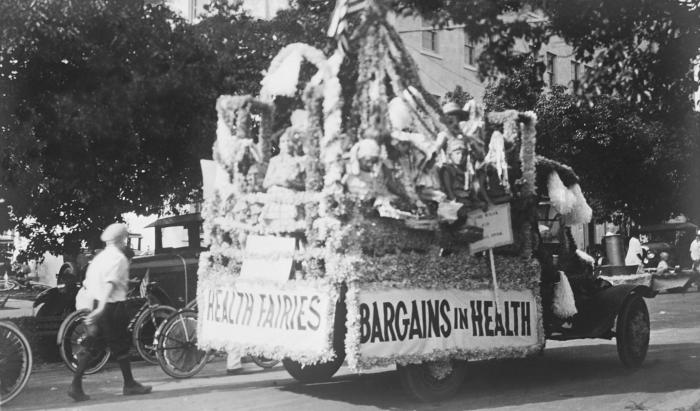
This historic image depicted a Floridian parade that was held in observance of 'Child Health Day'. Note the children on the float in the photograph and the banner reading, 'Health Fairies' on the rear of the vehicle. The original image was scanned from a glass lantern slide donated by the Minnesota Department of Health, and is one of a historical collection of documents and photographs devoted to observances of Child Health Day in the United States.